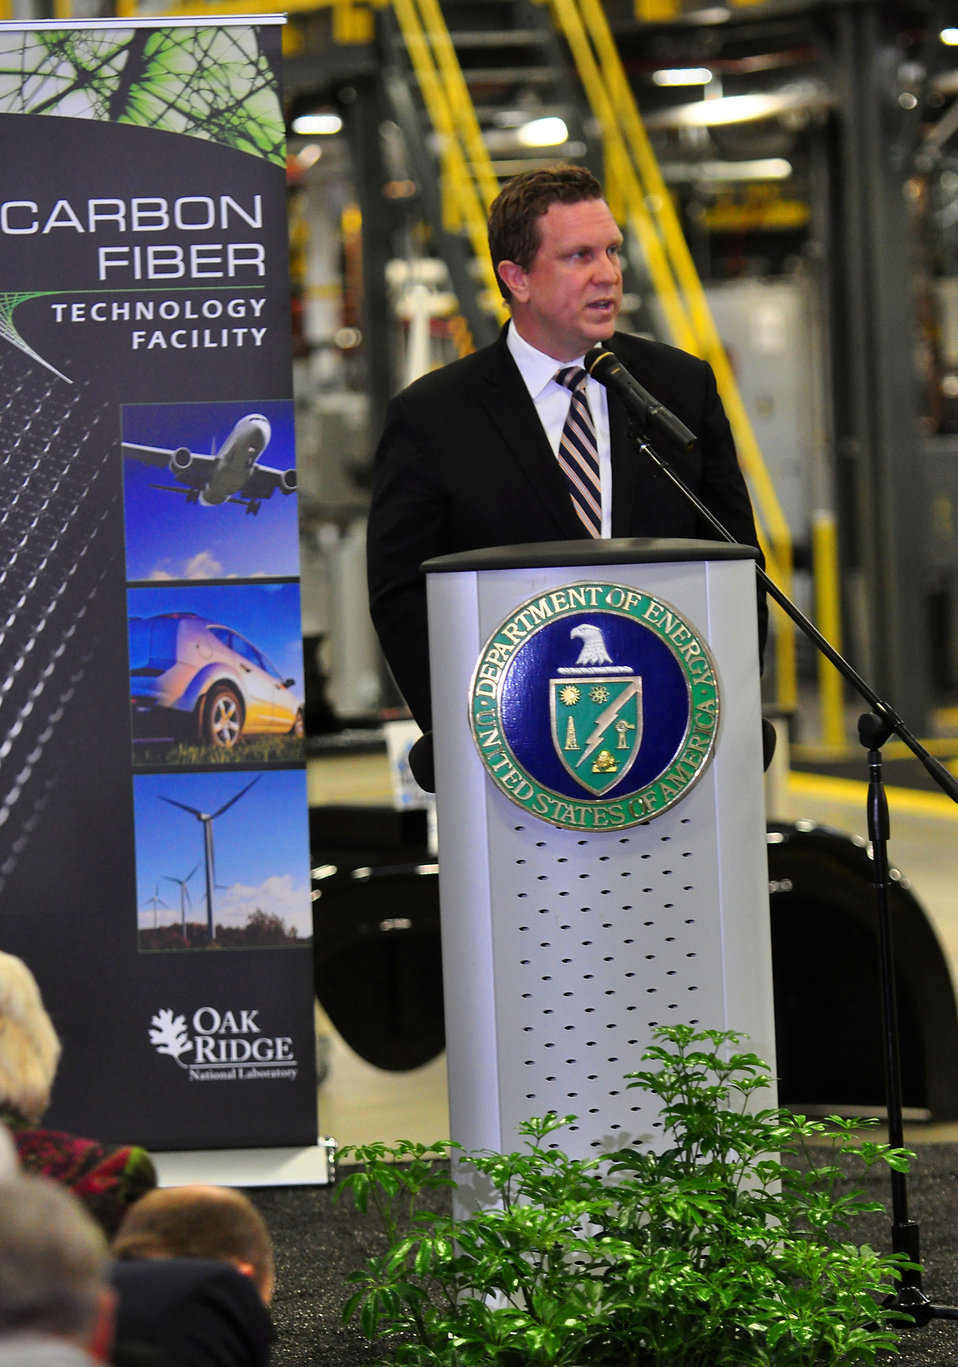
Carbon Fiber Technology Facilty Open House Oak Ridge Tennessee

13-025 DOE photo Lynn Freeny
Assistant Secretary for Energy Efficiency and Renewable Energy David Danielson